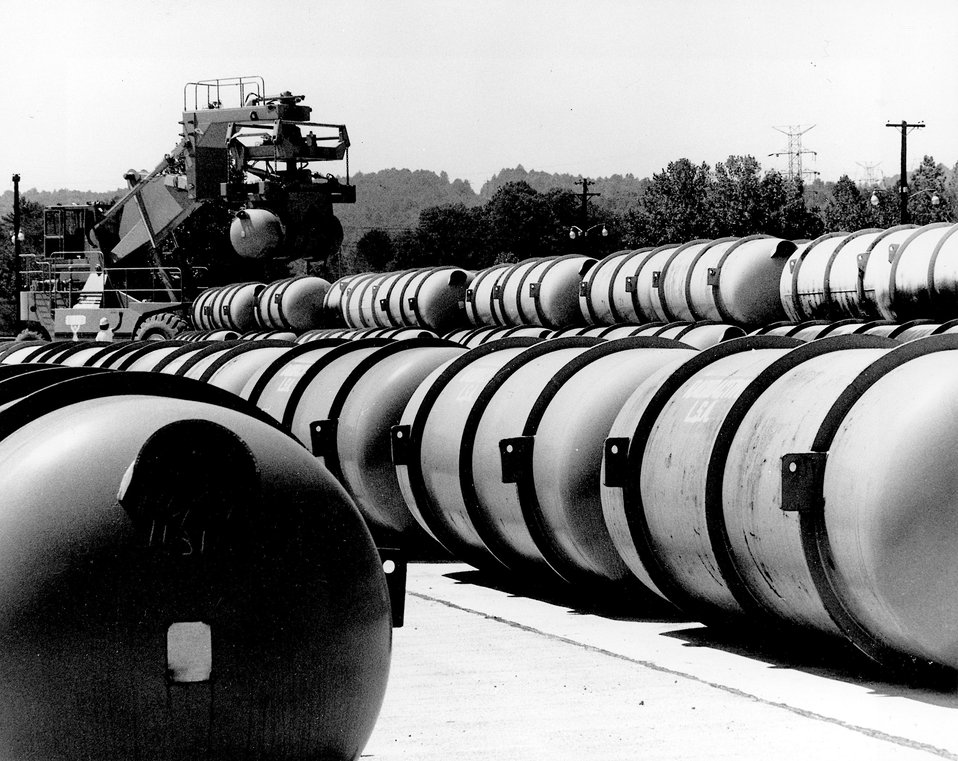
OAK RIDGE, TENNESSEE...Uranium enrichment through gaseous diffusion. The large tanks weigh 10 tons and contain feed material, uranium hexaflouride, for the enrichment process carried out in the ERDA's gaseous diffusion plants at Oak Ridge, Tennessee; Puducah, Kentucky and Portsmouth, Ohio. Circa 1977.